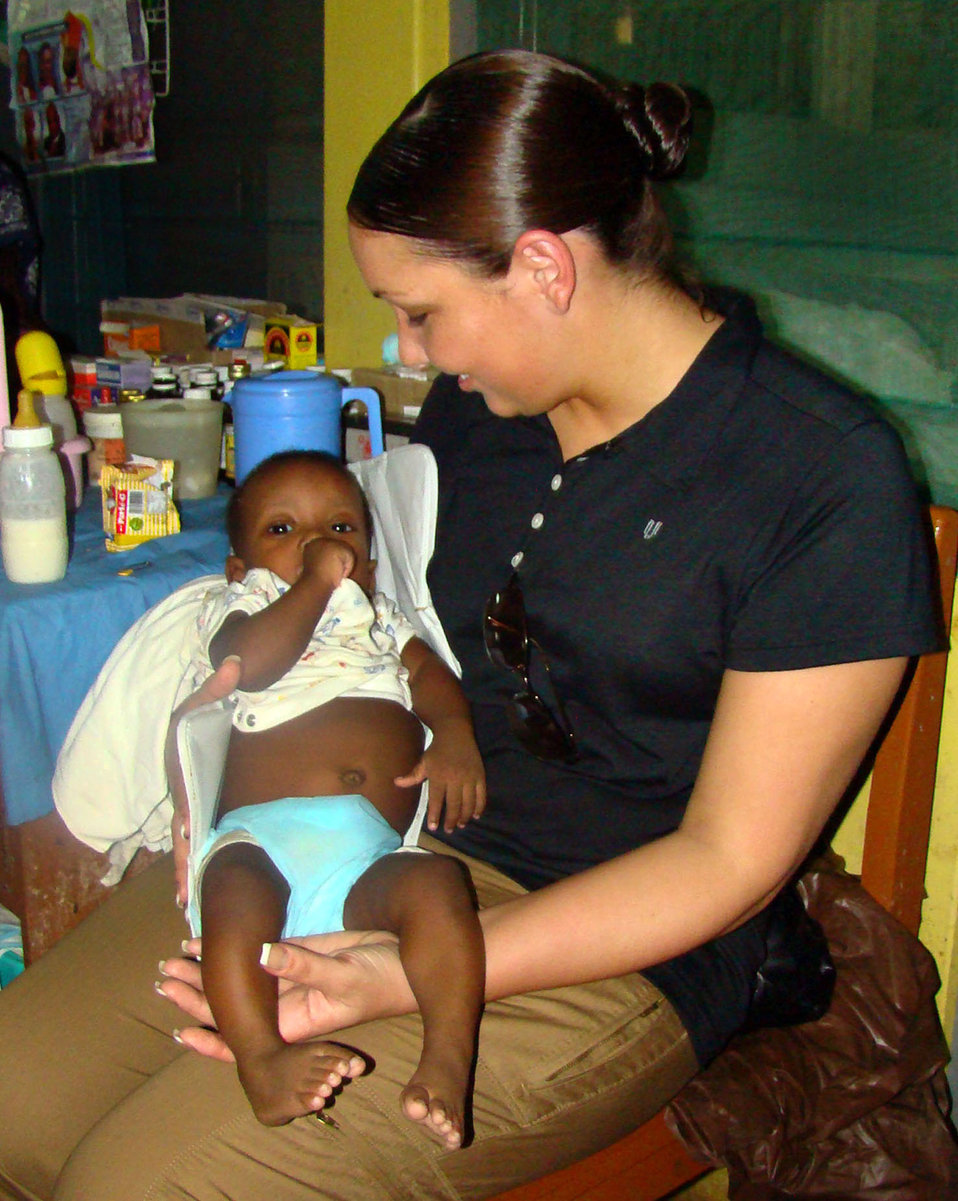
Airmen reach out to orphans in Africa

Tech. Sgt. Sarah Gordon holds an orphaned infant at the Osu Children's Home Feb. 18 in Accra, Ghana. Sergeant Gordon is the Joint Task Force West personnelist in charge of contingency operations. She is just one of 25 Airmen who visited the home to hand out more than $500 worth of supplies they purchased through personal donations. The Airmen are part of a joint task force providing infrastructure, aircraft and personnel in support of President George Bush's visits to Benin, Tanzania, Rwanda, Ghana and Liberia Feb. 16 through 21. Sergeant Gordon is the Joint Task Force West personnelist in charge of contingency operations.